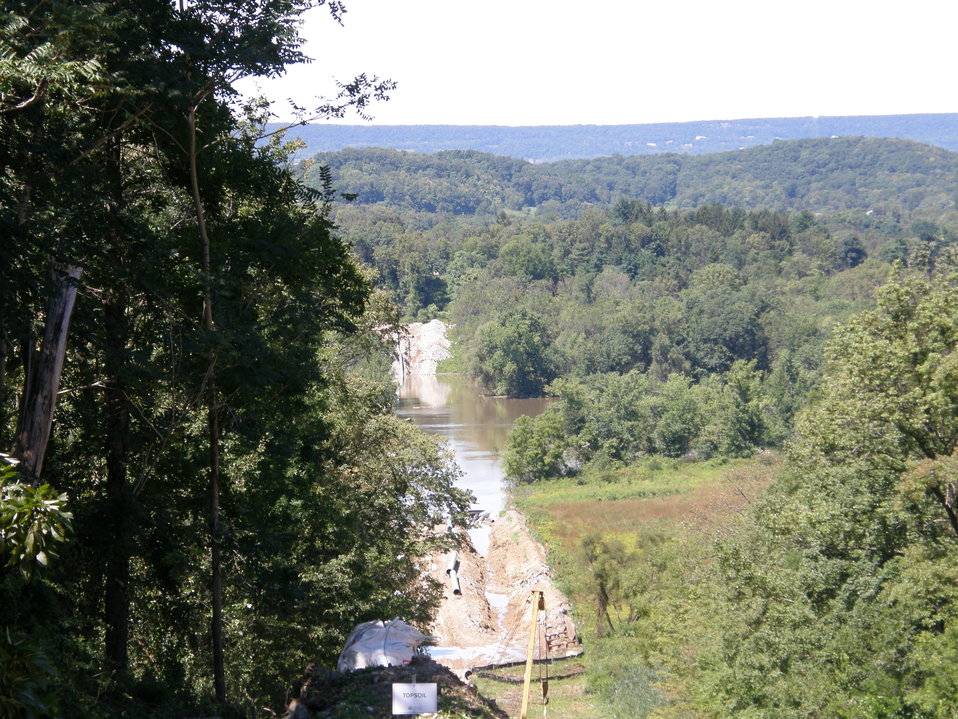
Hurricane Damage at Wallkill River National Wildlife Refuge August 30, 2011

Damage to Dagmar Dale Trail, Sussex, NJ.